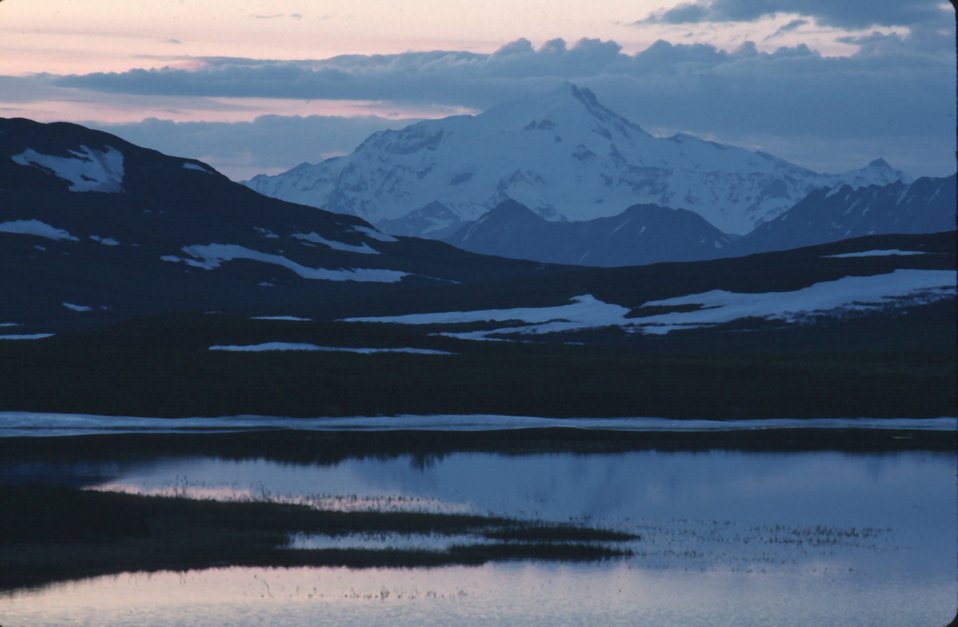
Sunset at Tangle Lakes, Denali Highway, Alaska